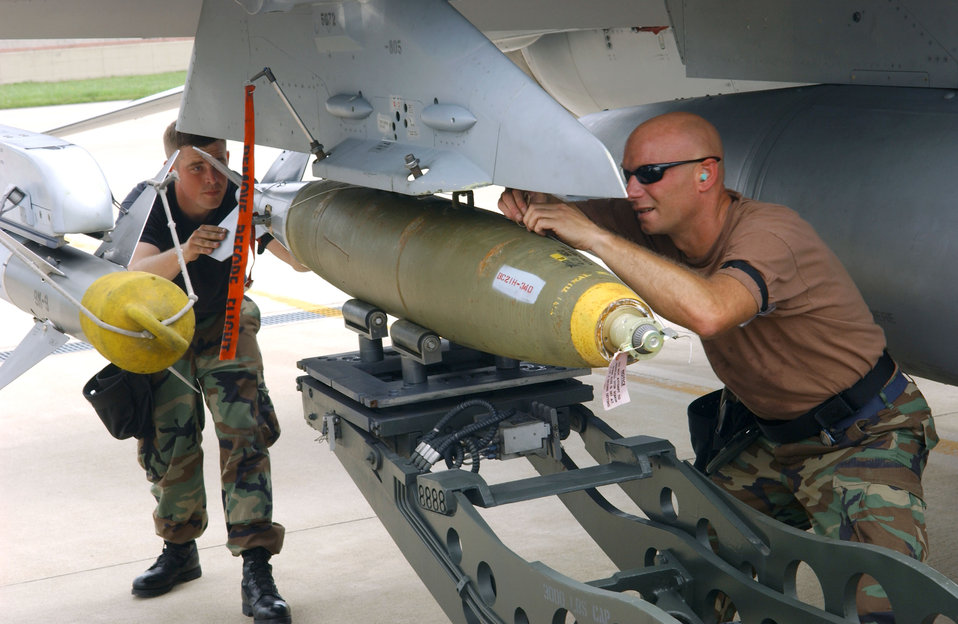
Air Guard flying in Korea

Tech. Sgt. Mike Geske, front, and Staff Sgt. Carl Valvota secure a Mark 82 bomb to an F-16 Fighting Falcon at Kunsan Air Base, South Korea, on July 5. The aircraft is from the Montana Air National Guard's 120th Fighter Wing at Great Falls.